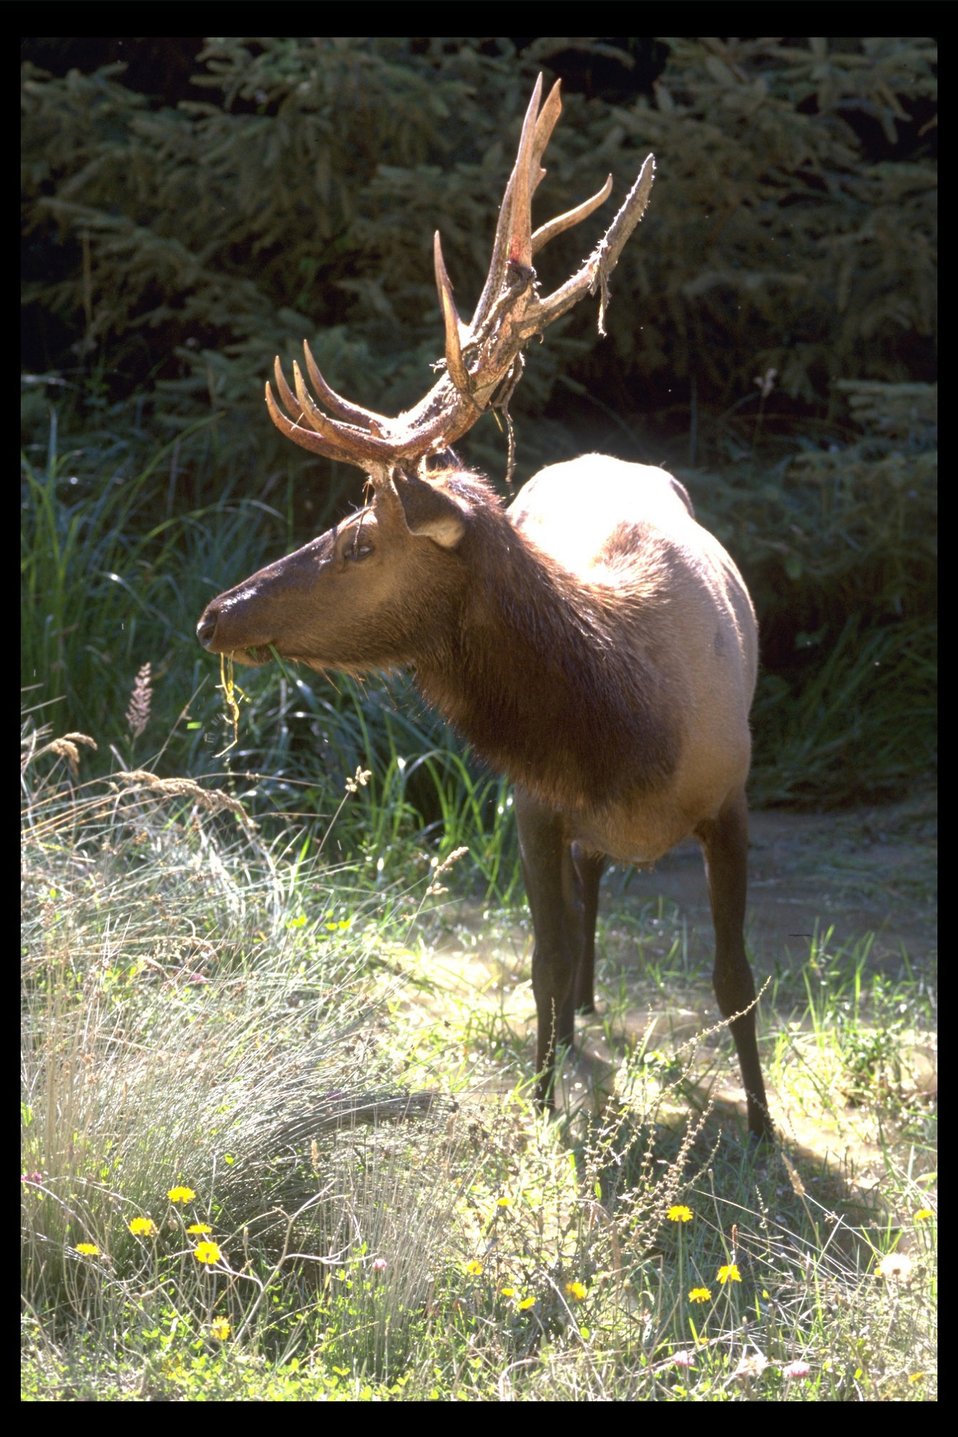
An Elk located in the Prairie Creek Redwoods Park in California.